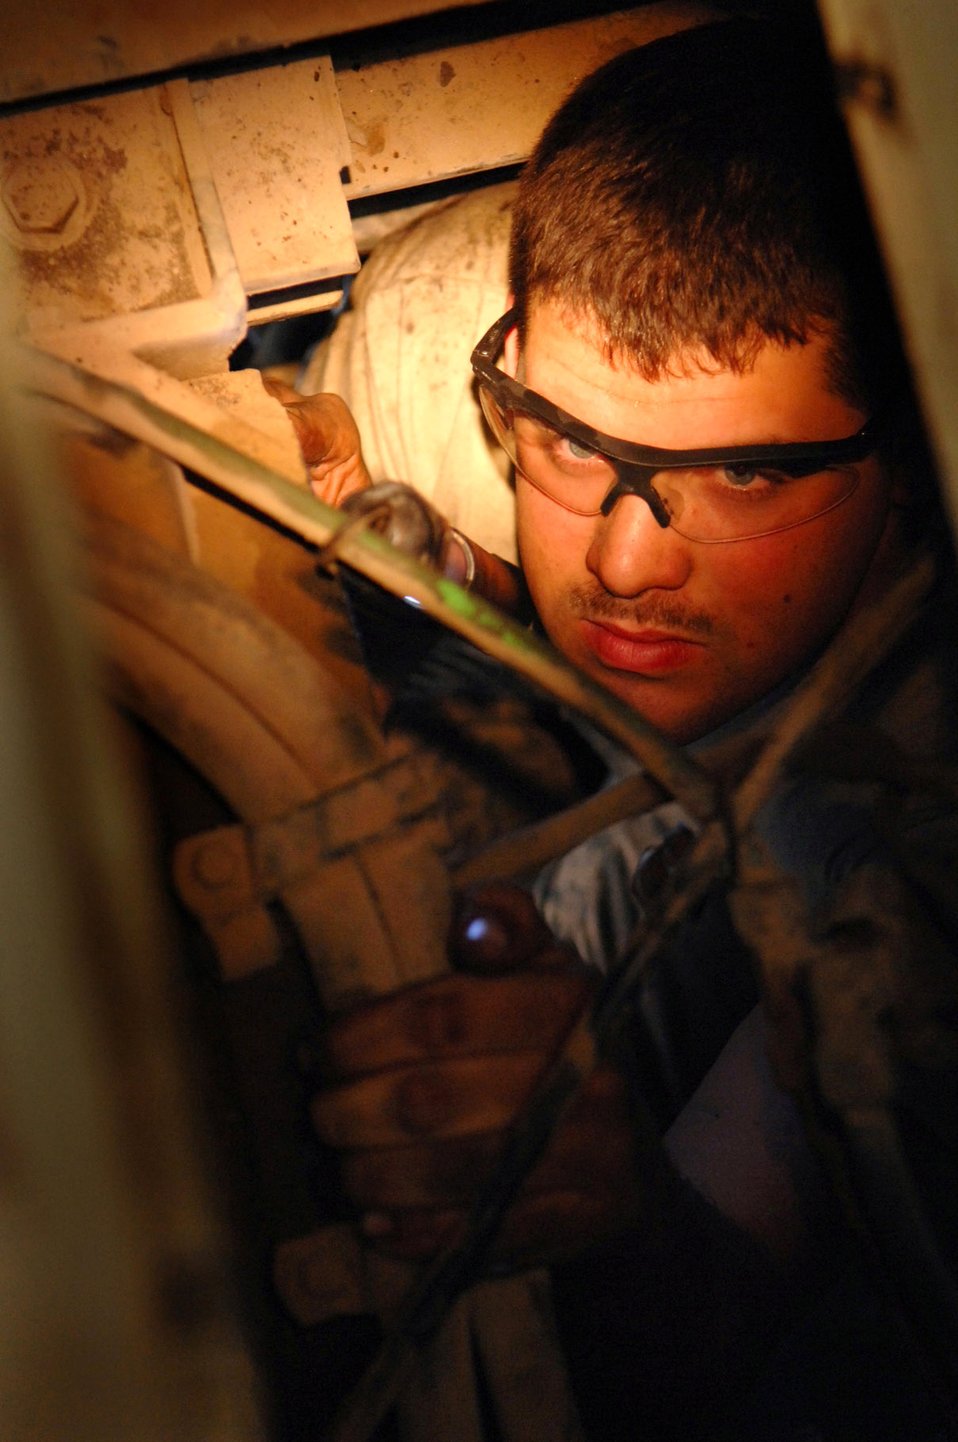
Keeping them rolling

Staff Sgt. Alex Blackburn examines a refueling truck's torque converter after replacing broken bolts on the fly wheel March 8 at Balad Air Base, Iraq. The fly wheel is an integral part of the engine that starts the refueling truck. Keeping the more than 20-year-old trucks operational is a vital part of Sergeant Blackburn's work. Without the work of the mechanics such as the sergeant, aircraft, base generators and many other types of equipment would be left bone dry. Sergeant Blackburn, a 332nd Expeditionary Logistics Readiness Squadron refueling truck mechanic, is deployed from F.E. Warren Air Force Base, Wyo.